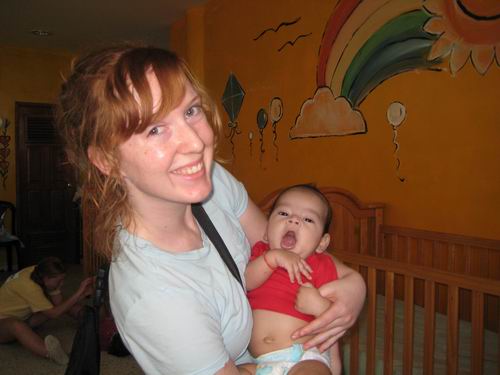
Deanna